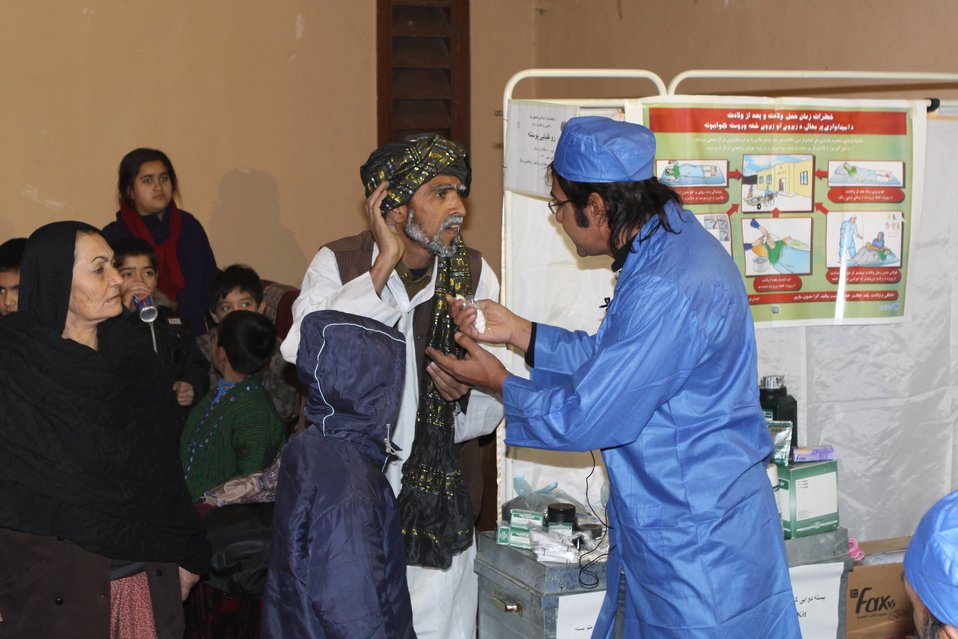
Community Health Workers Celebrated

Kabul, Afghanistan | December 5, 2010 — In support of the United Nations designated International Volunteer Day for Economic and Social Development, Afghanistan’s Ministry of Public Health celebrated its annual Community Health Worker Day today. Acting Minister of Public Health Dr. Suraya Dalil, USAID Senior Deputy Mission Director Robert Hellyer, other government officials, and international donors joined in recognizing the critical contribution of community health workers in Afghanistan and encouraging them to continue their voluntary support to their communities.
The event praised the contributions of the more than 22,000 volunteers throughout the country who deliver community level health-education, counseling, and services out of village health posts located in private homes. The Ministry of Public Health envisioned that community-based healthcare programs will actively encourage communities and families to adopt healthy lifestyles and behaviors, and provide families access to high quality and socially acceptable preventative medicine and life-saving services.
“We have 22,000 community health workers in Afghanistan that are able to implement the basic and standard medicines. They all have been trained through a job description,” said Minister Dalil. Addressing the health workers, she added, “I am proud and feel powerful that I have people like you.”
USAID-funded health projects collaborate closely with the Ministry of Public Health to improve the health and nutritional status of Afghans, provide quality primary healthcare, and promote healthy behaviors at the community and household-levels. USAID supported the training of more than 9,000 of the volunteer community health workers currently working in Afghanistan.
“On behalf of the American people, I congratulate the Community Health Workers for their diligence to gain the skills and knowledge necessary to serve their communities in this important role,” said USAID Senior Deputy Mission Director Hellyer. “USAID strongly supports community based health care and believes that quality community-based health services are essential to reaching Afghanistan’s Millennium Development Goals.”
To support the Basic Package of Health Services, USAID assisted in developing the community health worker training manual, helped train community health worker supervisors and master-trainers, facilitated in-service training, and produced and developed reporting tools, job aids, and education materials.